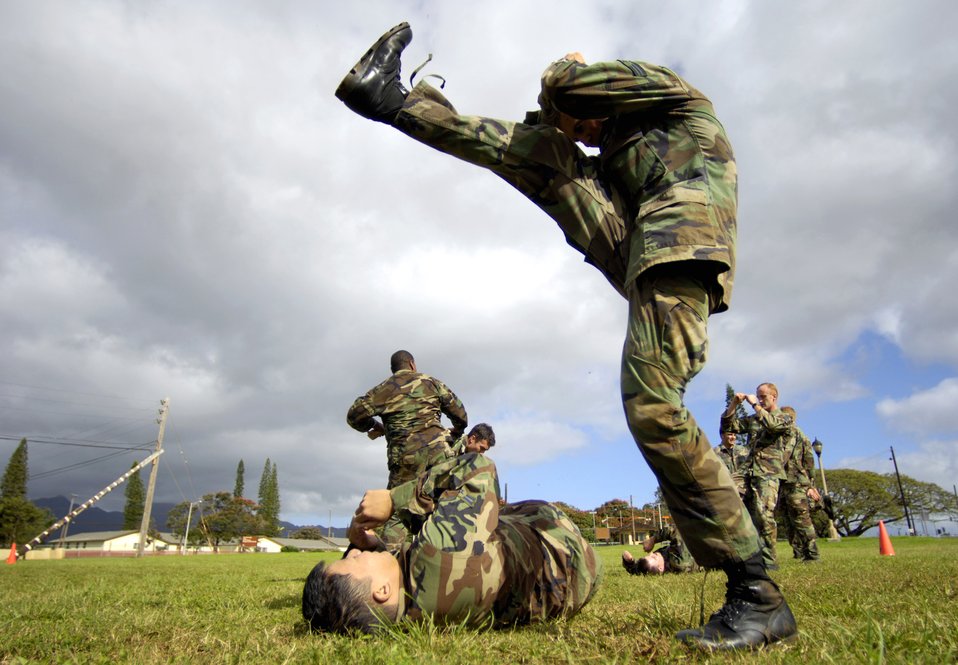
Close-combat skills

Senior Airman Glenn Wilderman practices close-combat skills with Airman 1st Class Clayton Yeung on Thursday, April 13, 2006, at Wheeler Army Air Field, Hawaii. Airmen Wilderman and Yeung are tactical air controllers from the 25th Air Support Operation Squadron.